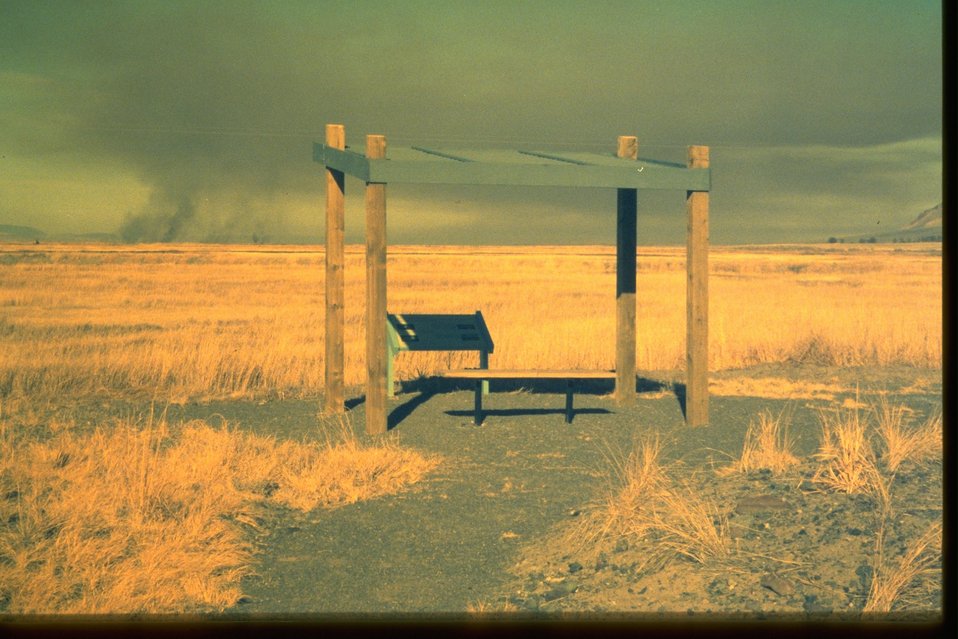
Viewing blinds, interpretive panels, and kiosks at the Warner Wetlands.